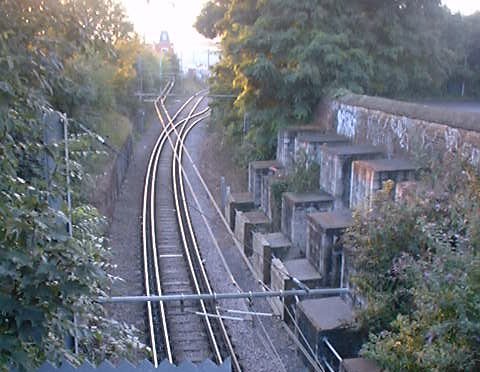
028140 tramlink mitcham